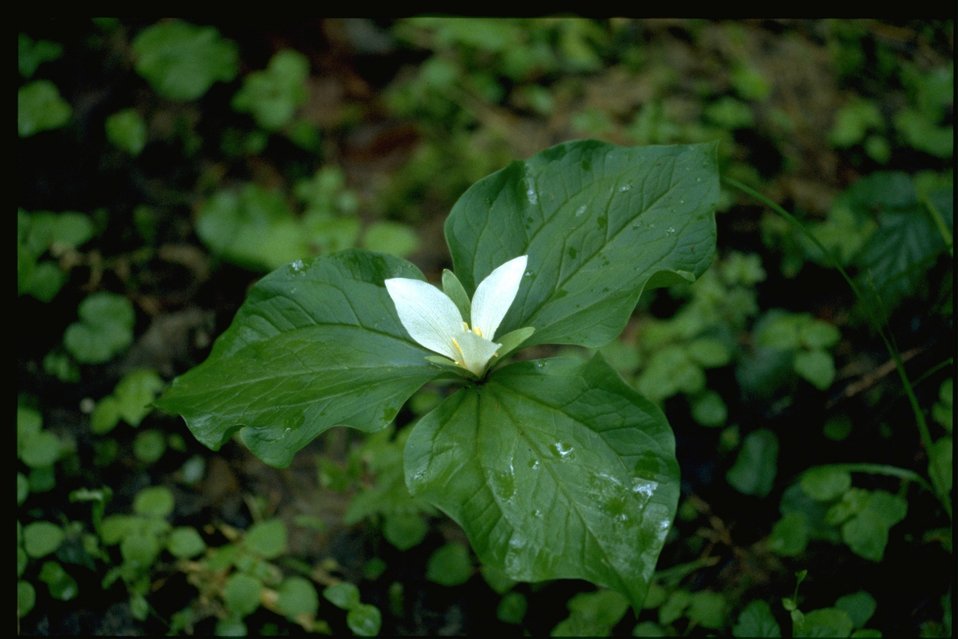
Medium shot of Trillium ovatum.